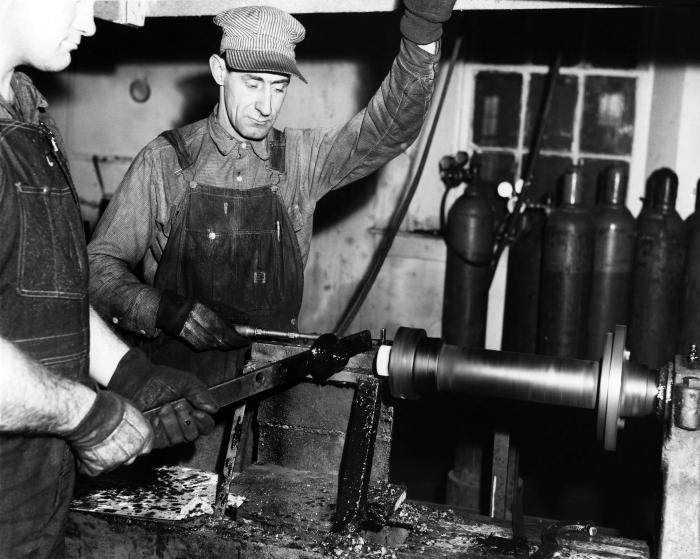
This 1947 historical photograph was provided by the Center for Disease Control's (CDC), National Institute for Occupational Safety and Health (NIOSH). It depicted an industrial setting in the state of Indiana, in which two plant workers were shown in the process of greasing grinding machine components. In the 1940s and 1950s, the Industrial Hygiene Division (IHD) investigated hazards associated with activities such as metal grinding. It was in scenarios such as this where there existed the potential for worker health problems associated with industrial metal grinding, including respiratory and dermatologic hazards from inhalation and contact with fungi- and bacteria-contaminated synthetic metal-working fluids, oil mists, and grinding dust in the machining areas.